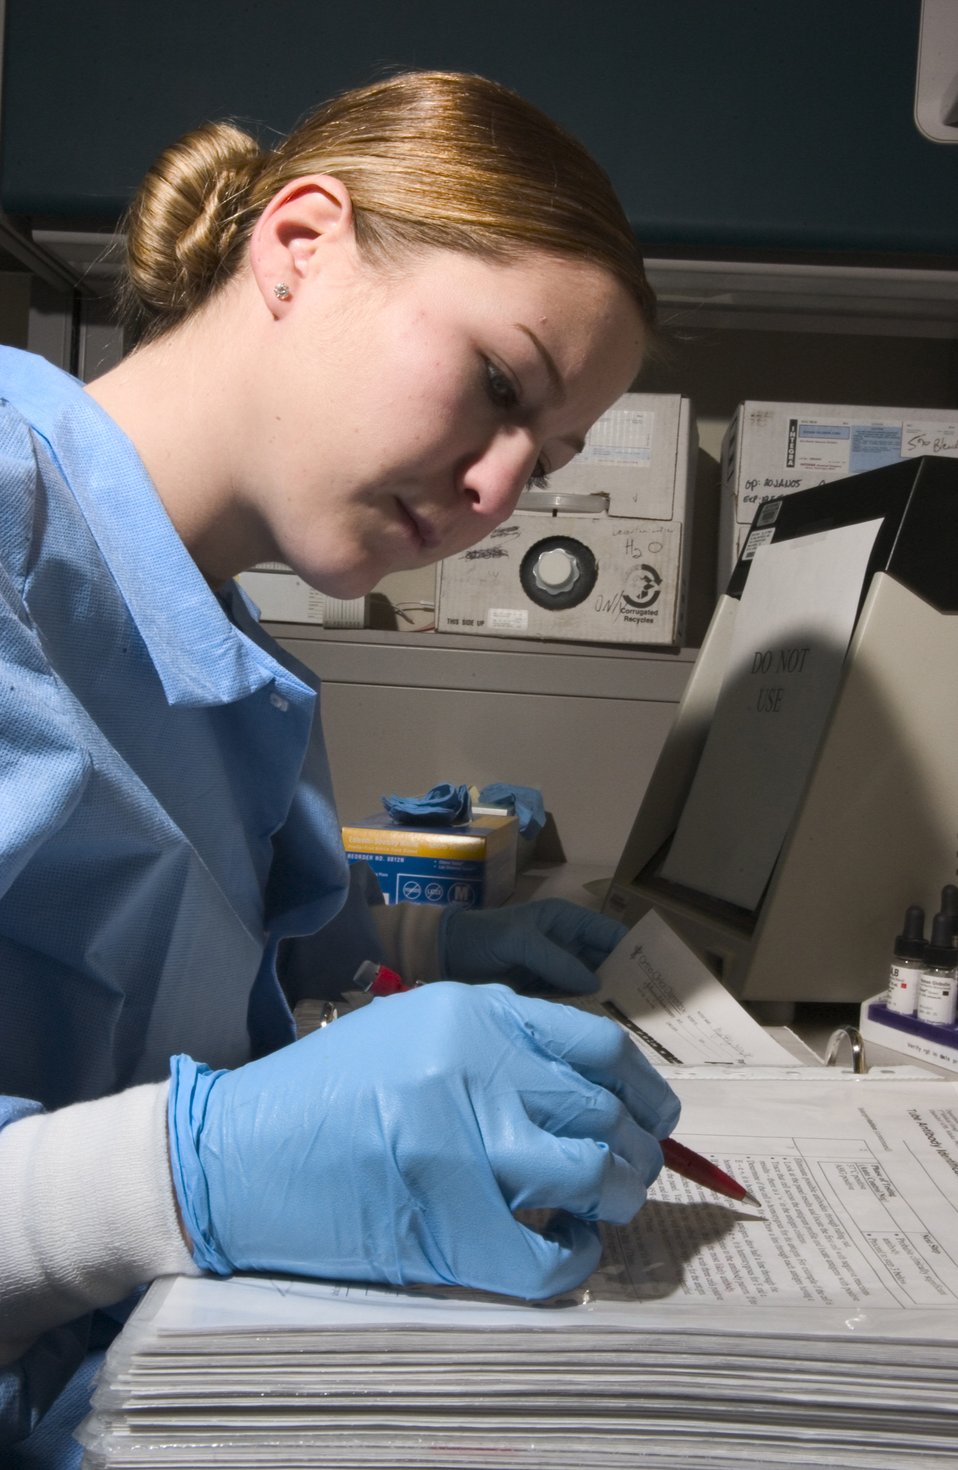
Under the scope

Senior Airman Tiffany Brown identifies antibodies in blood samples at Elmendorf Air Force Base, Alaska, on Thursday, March 23, 2006. Airman Brown is a medical laboratory apprentice with the 3rd Medical Group.